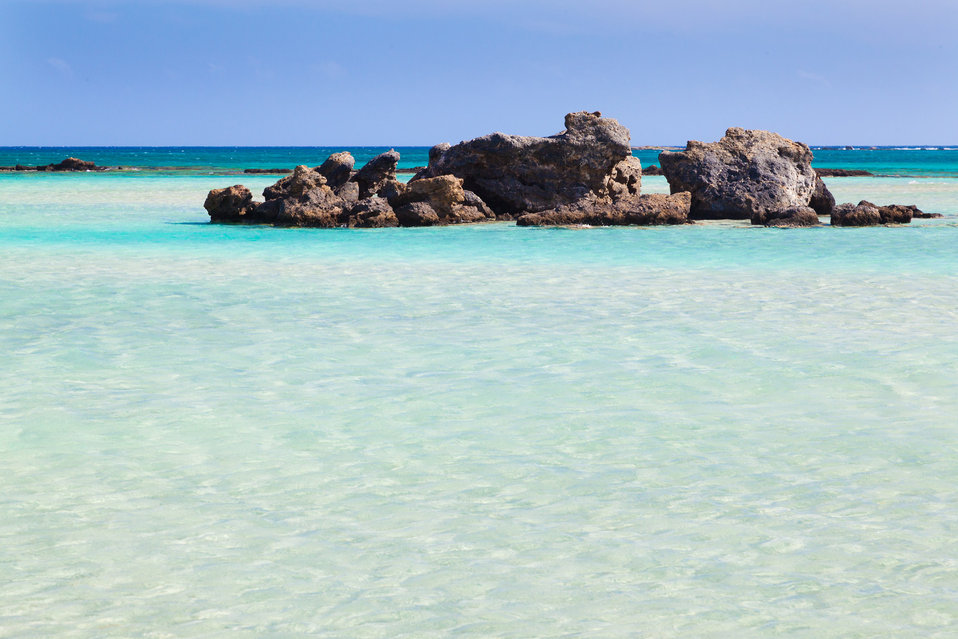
Tropical blue lagoon

Beautiful lagoon in crete.